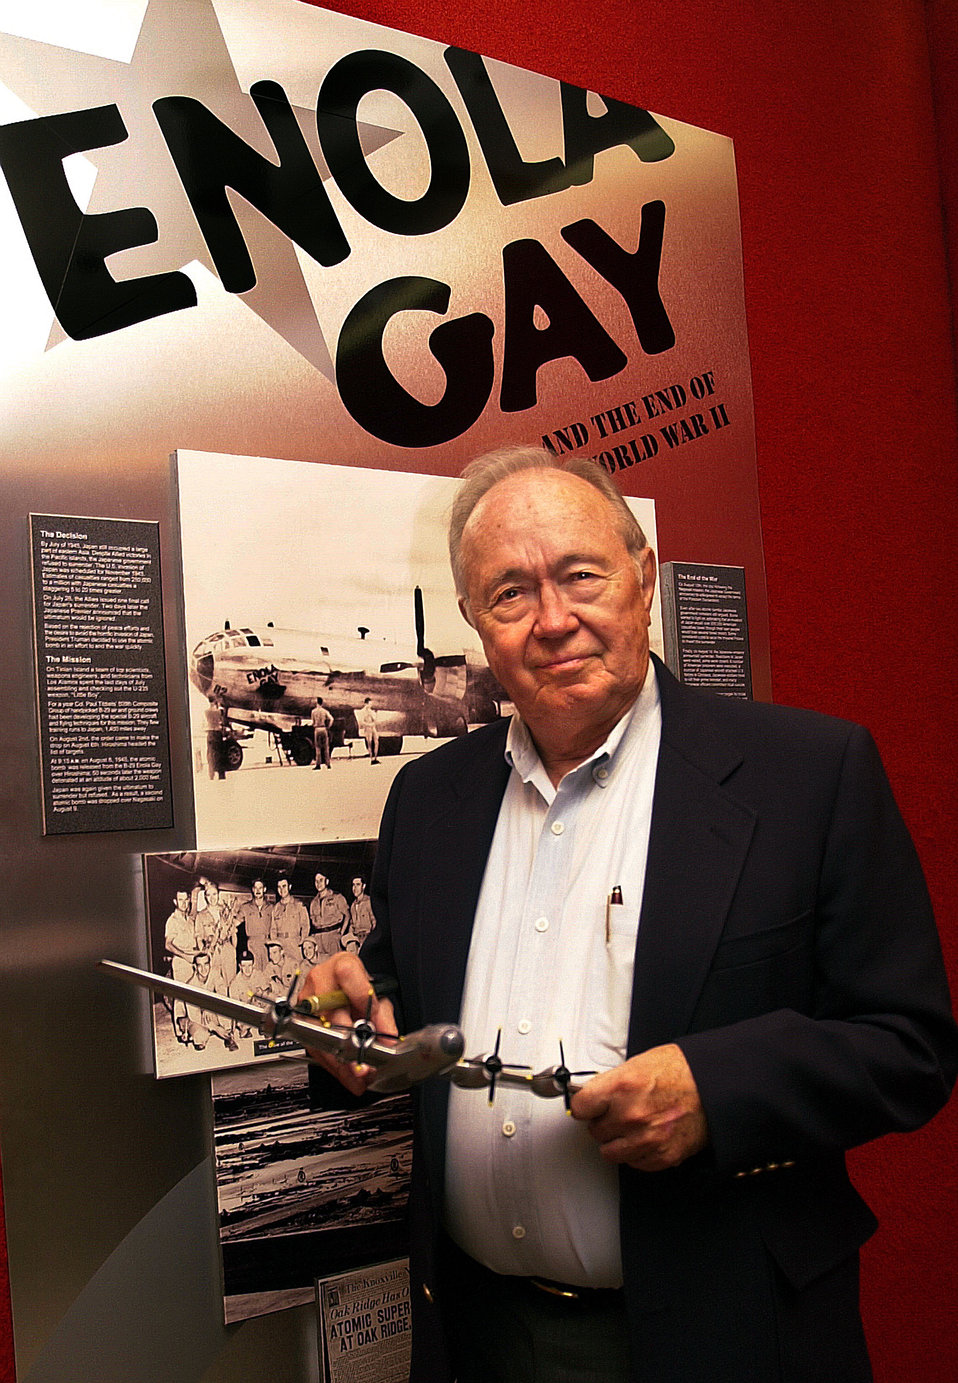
Dutch Van Kirk Navigator of Enola Gay visits AMSE American Museum of Science and Energy Oak Ridge

00-0099-01 DOE photo by Lynn Freeny Oak Ridge, Tennessee 6-10-2000